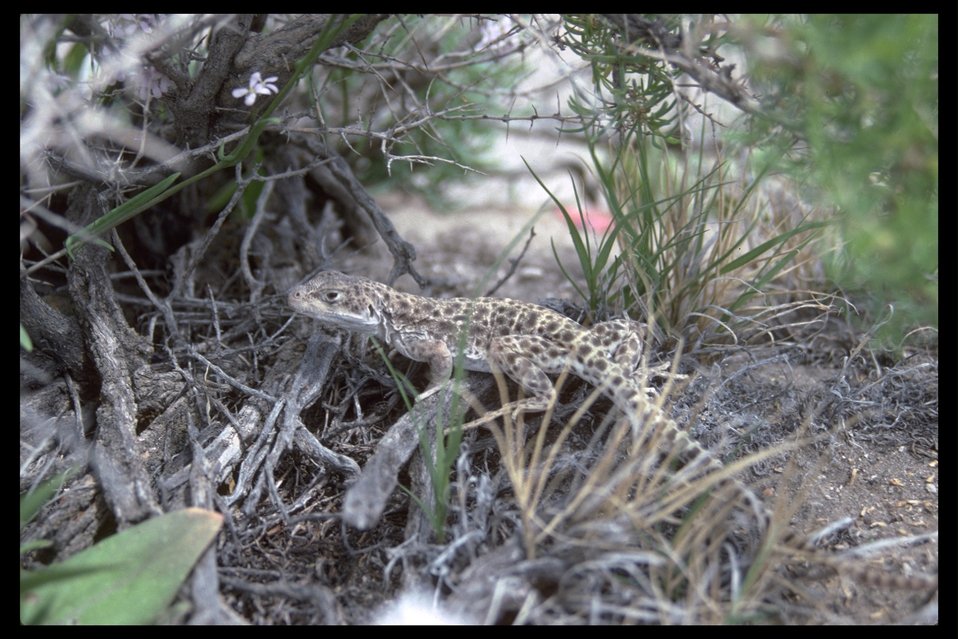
Lizard in sagebrush and grass. (WSA 2-85F)